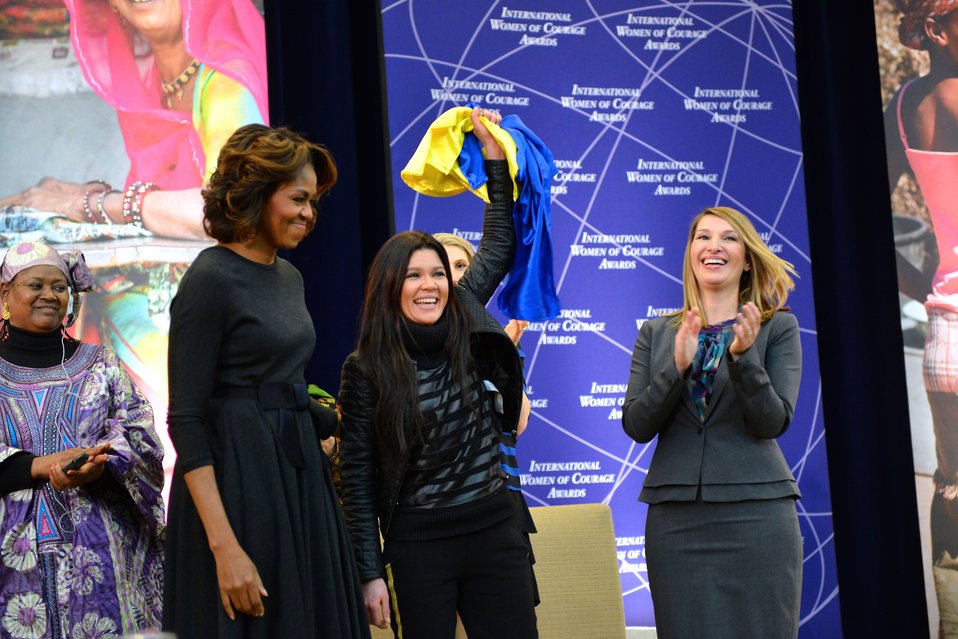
First Lady Michelle Obama and Deputy Secretary Higginbottom With 2014 IWOC Awardee Ruslana Lyzhychko of Ukraine

First Lady Michelle Obama and Deputy Secretary Heather Higginbottom pose for a photo with 2014 Secretary of State’s International Women of Courage Award Winner Ruslana Lyzhychko, a EuroMaidan volunteer and People’s Artist of Ukraine, at the U.S. Department of State in Washington, D.C., on March 4, 2014.